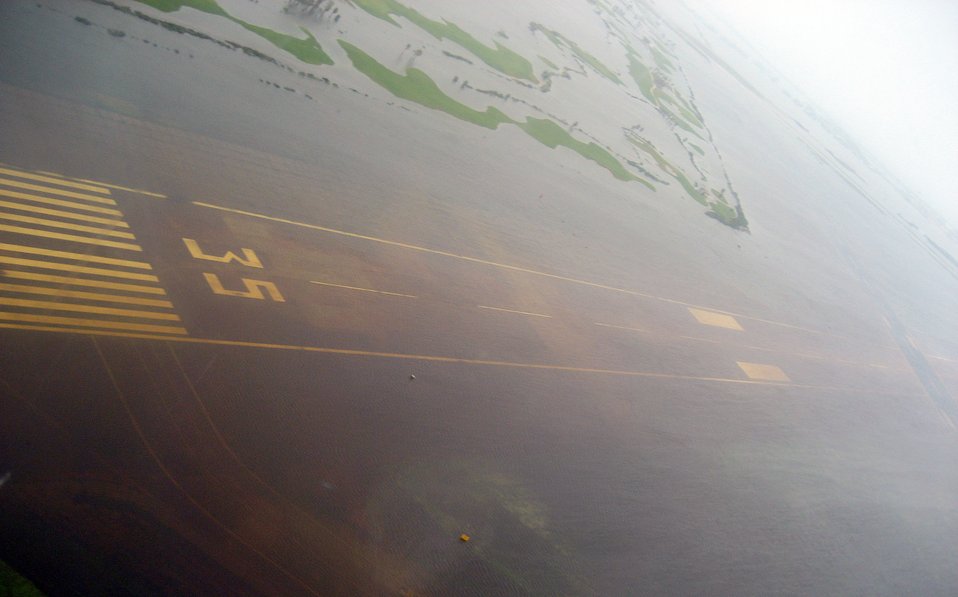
Eye in the sky

Dragonslayer 611, a SH-60F Sea Hawk helicopter, piloted by Cmdr. Mal Sandie (commanding officer HS-11) and Lt. Cmdr. Tim Kinsella survey Galveston island over the airport runway looking for damaged areas caused by Hurricane Ike Sept. 13. The helicopters are from the Helicopter Anti-Submarine Squadron 11, Naval Air Station Jacksonville, Fla.